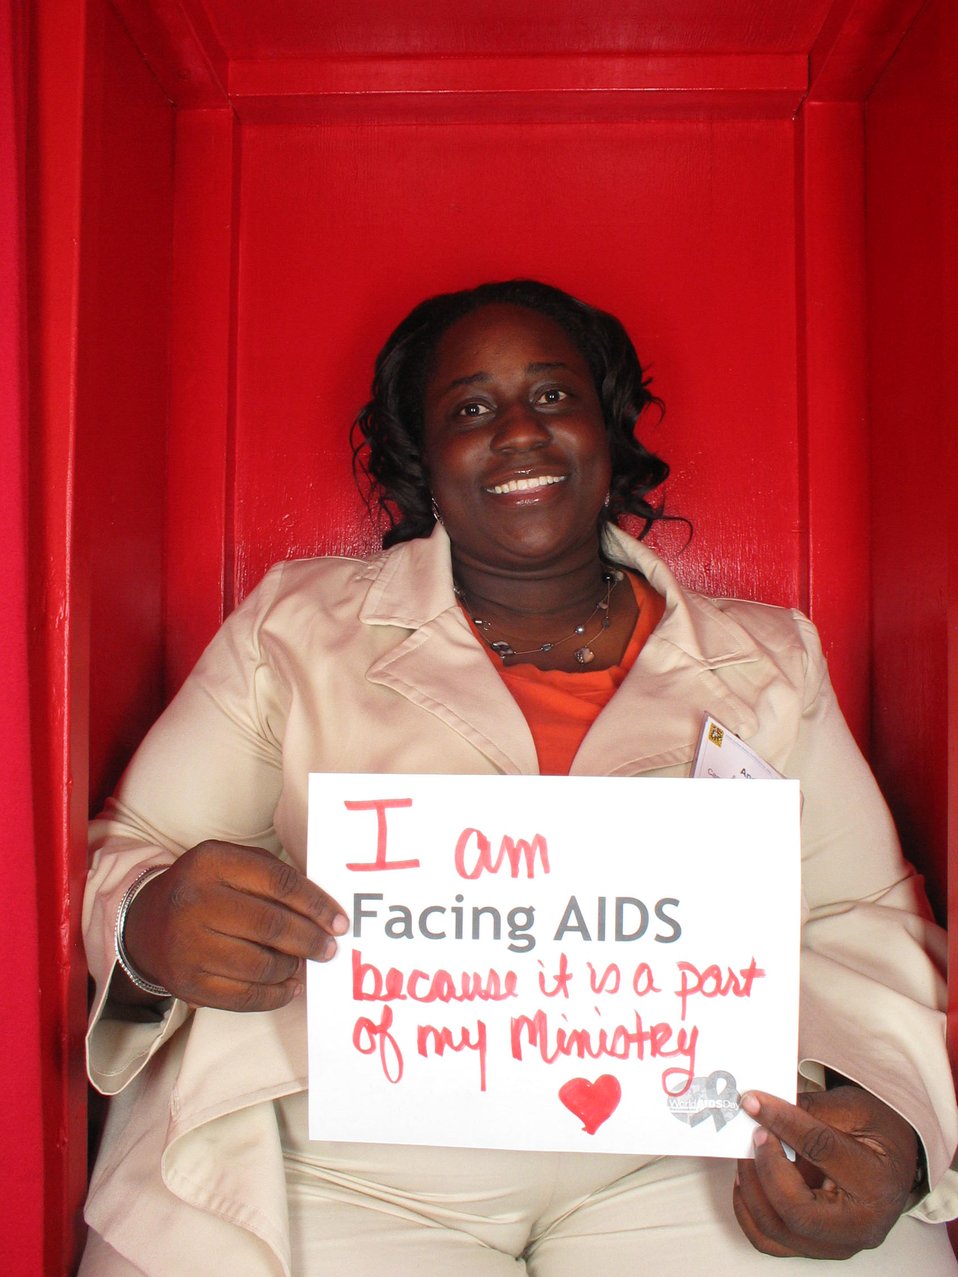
I am Facing AIDS because it is part of my ministry.